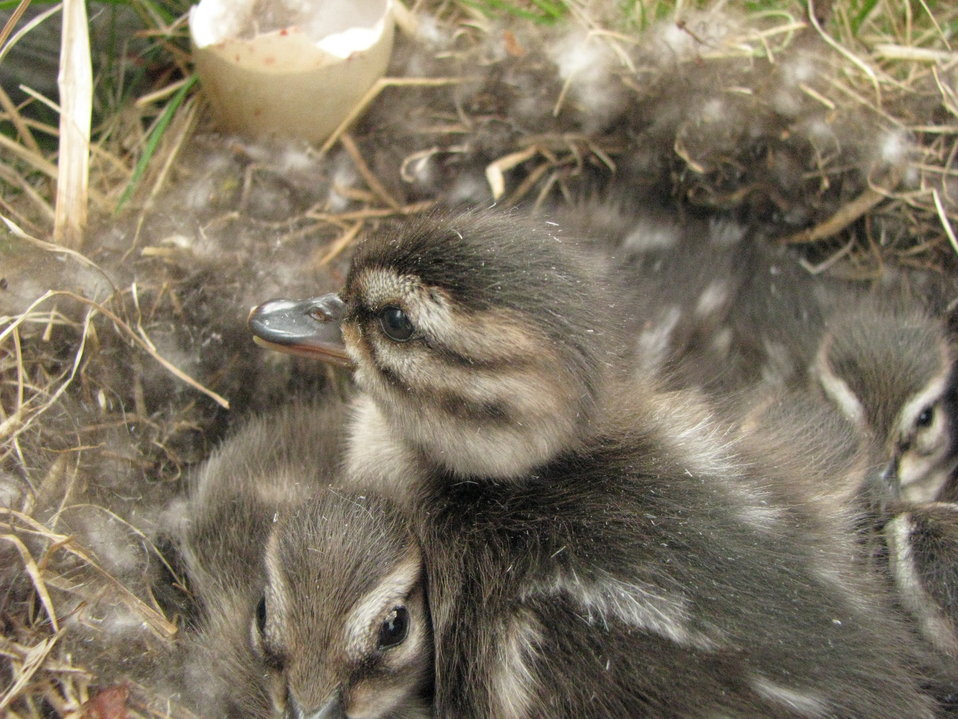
Pintail duckling close-up

Yukon Delta NWR